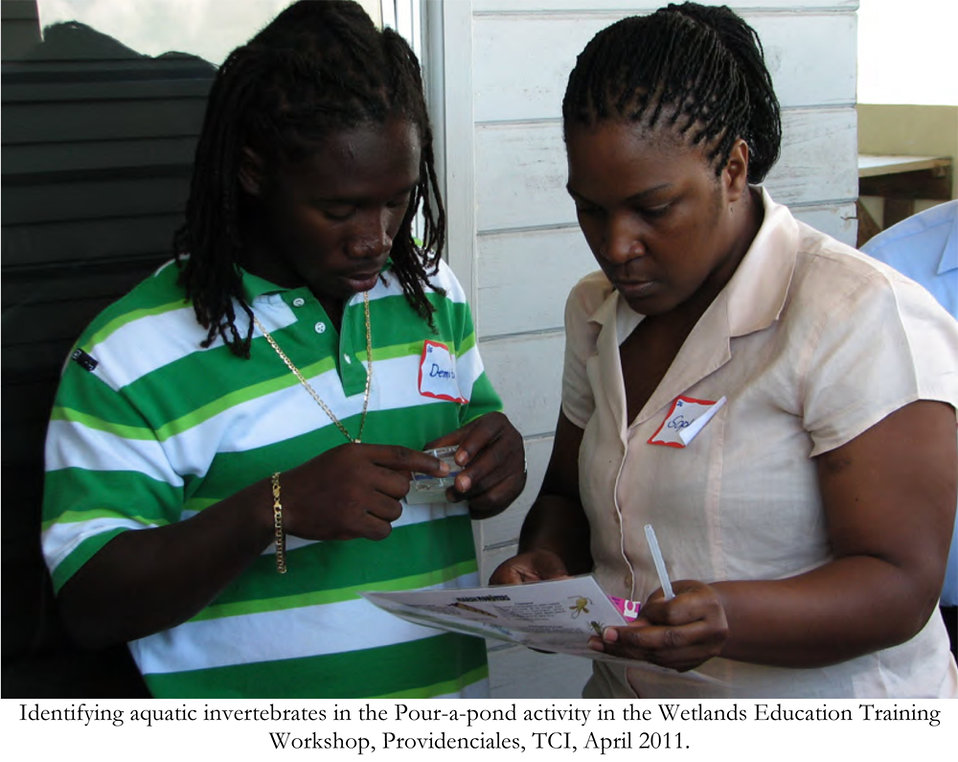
SCSCB-FWS-Interim-Report-2011